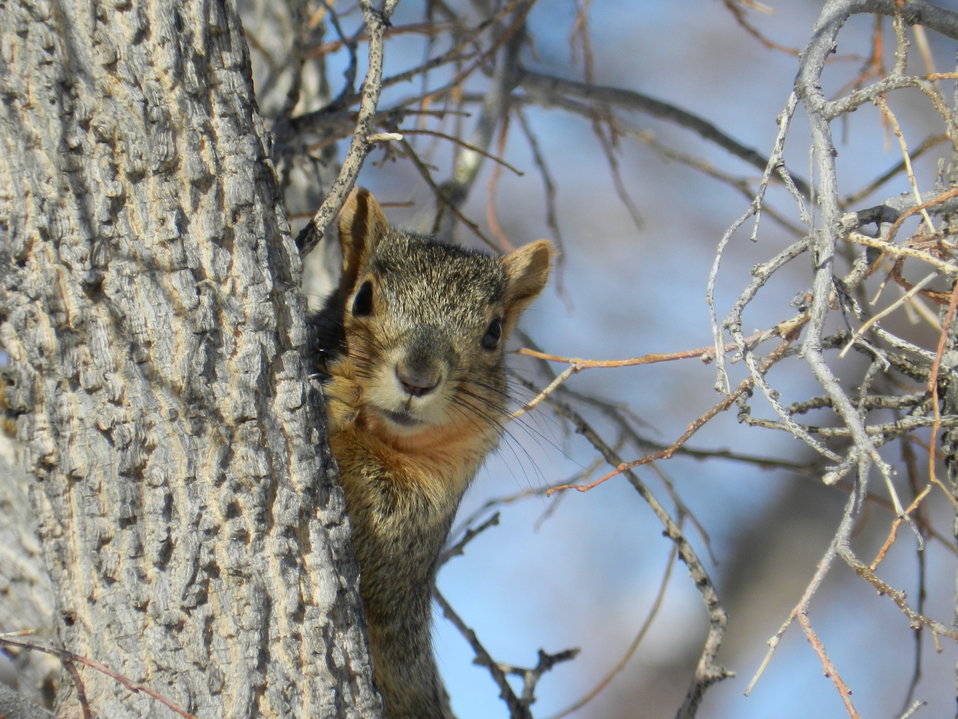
Fox squirrel, Hot Springs State Park, Thermopolis, WY.

Credit: Pedro 'Pete' Ramirez, Jr. / USFWS